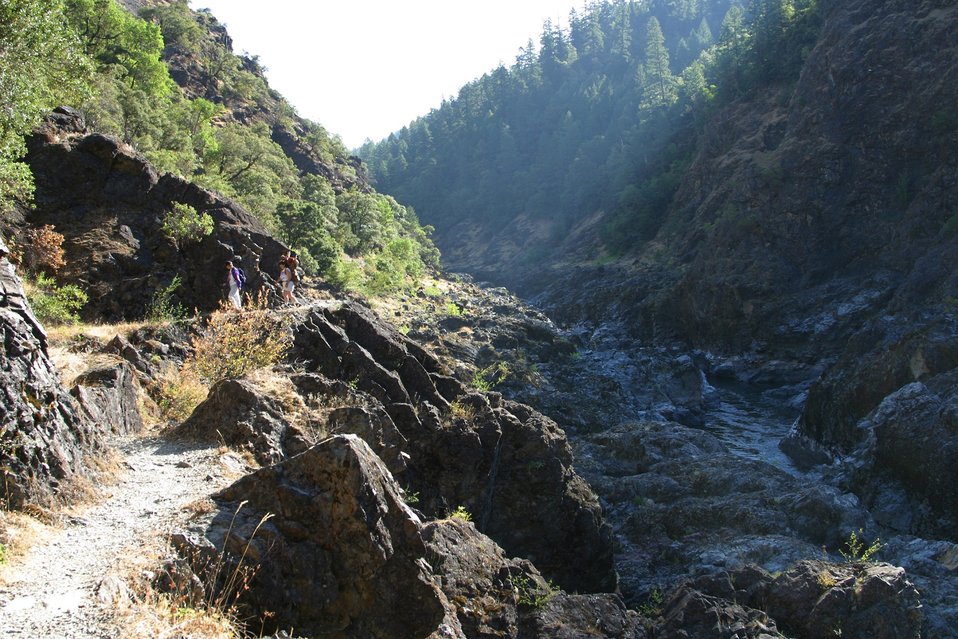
Hiking the Rogue River Trail between Mule Creek and Blossom Rapids.